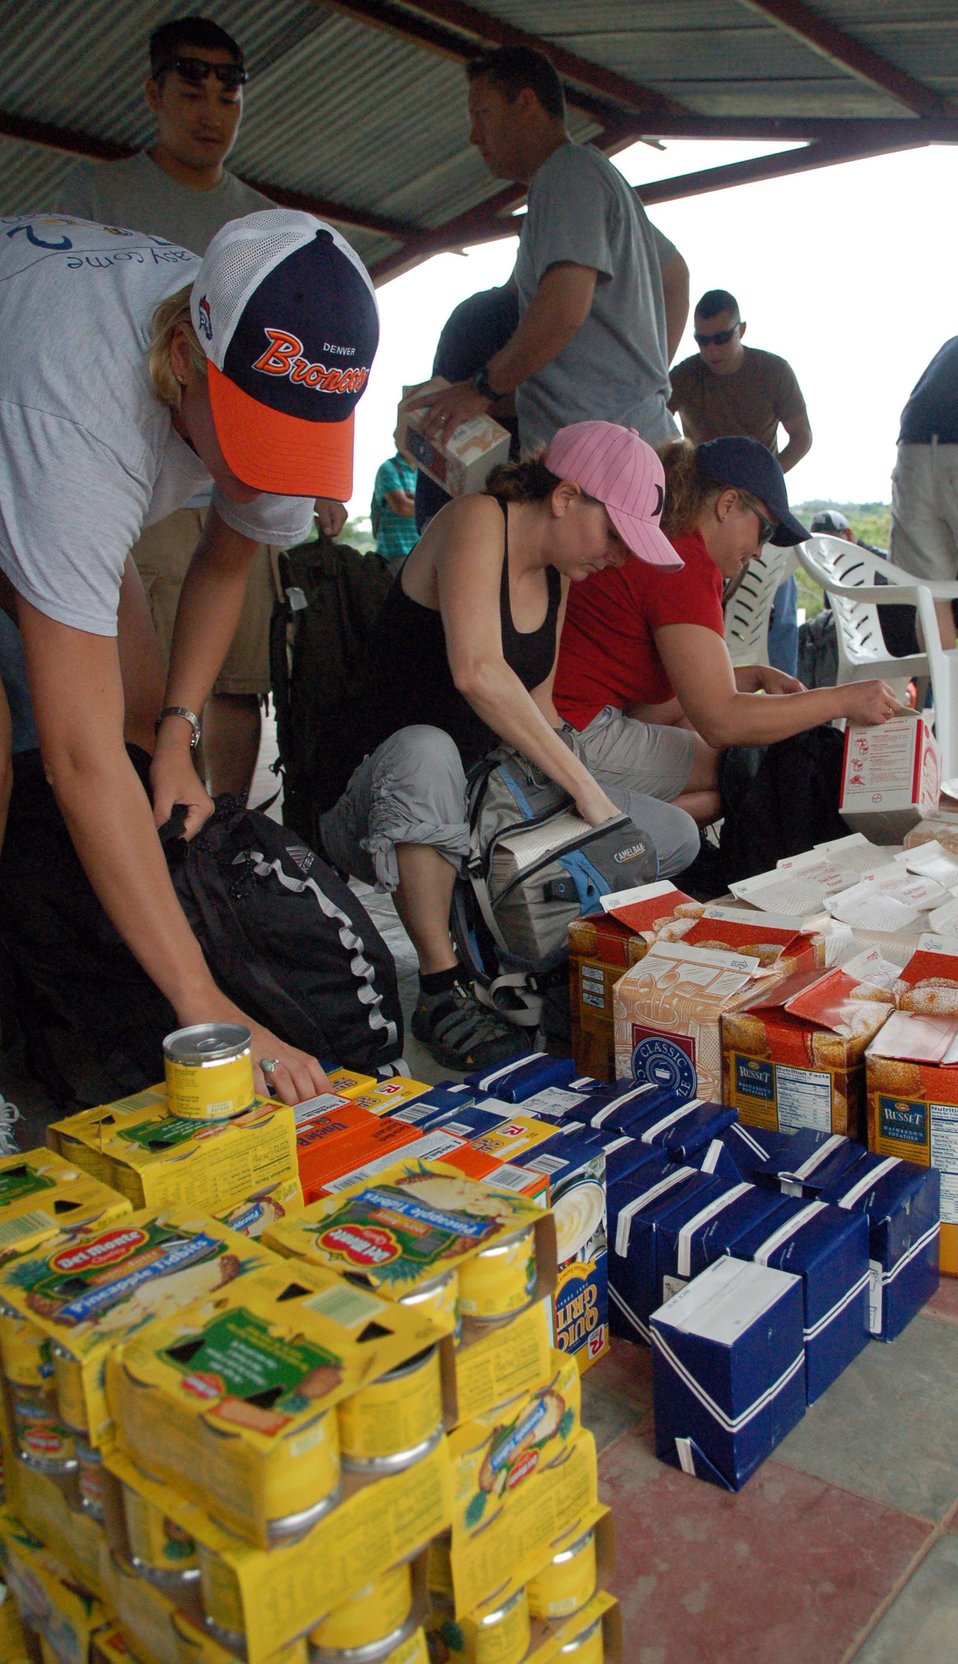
Servicemembers make mountain trek to deliver food

Volunteers pack backpacks full of food for a nearly five-mile hike Sept. 29 into the mountains near Comayagua. The trip, organized by the Joint Task Force-Bravo Chapel from Soto Cano Air Base, Honduras, was to deliver the supplies to families living in the mountains.